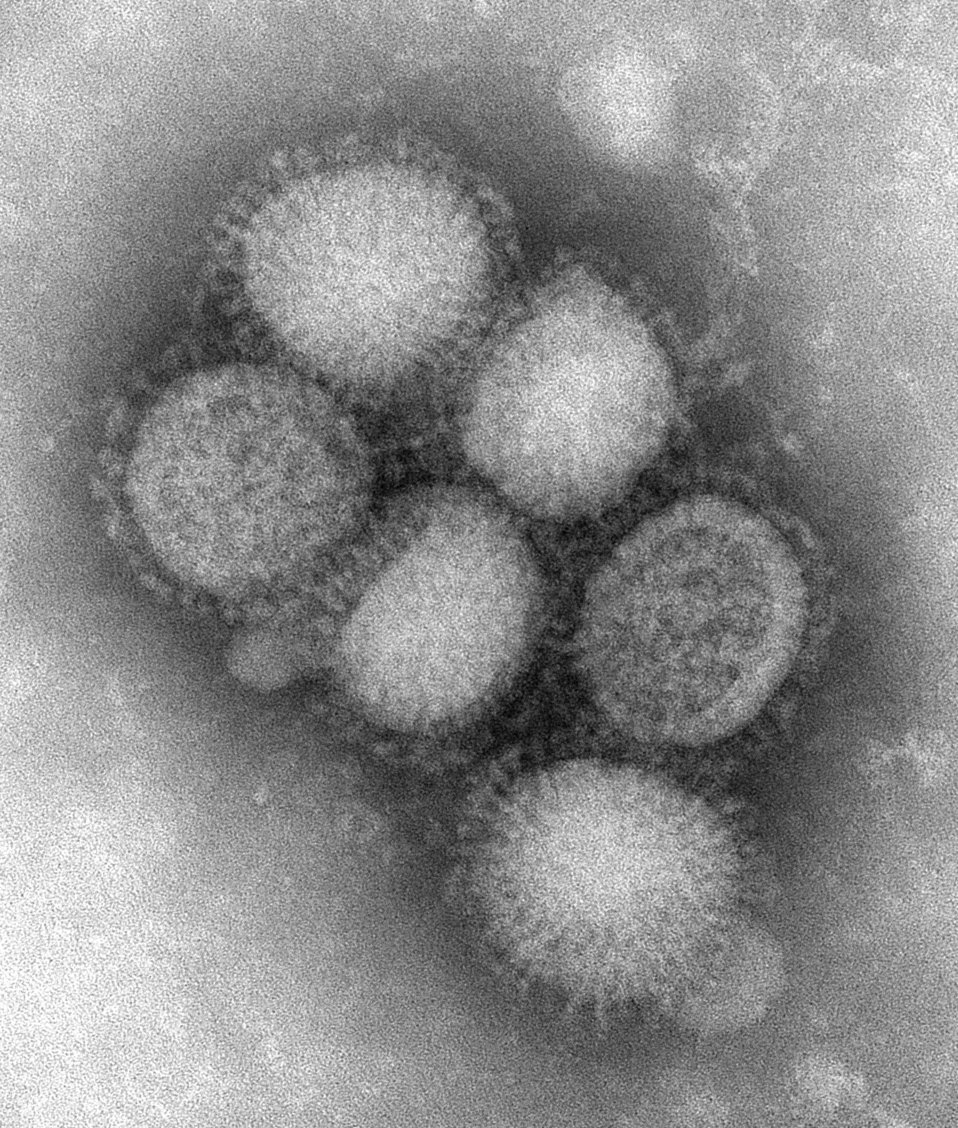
This negative stained transmission electron micrograph (TEM) depicted some of the ultrastructural morphology of the A/CA/4/09 swine flu virus. See PHIL 11214 for a colorized version of this image.What is Swine Influenza?